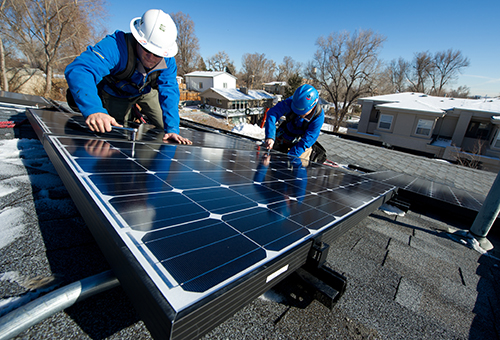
Lighthouse solar install microcrystalline photovoltaic modules on top of town home.